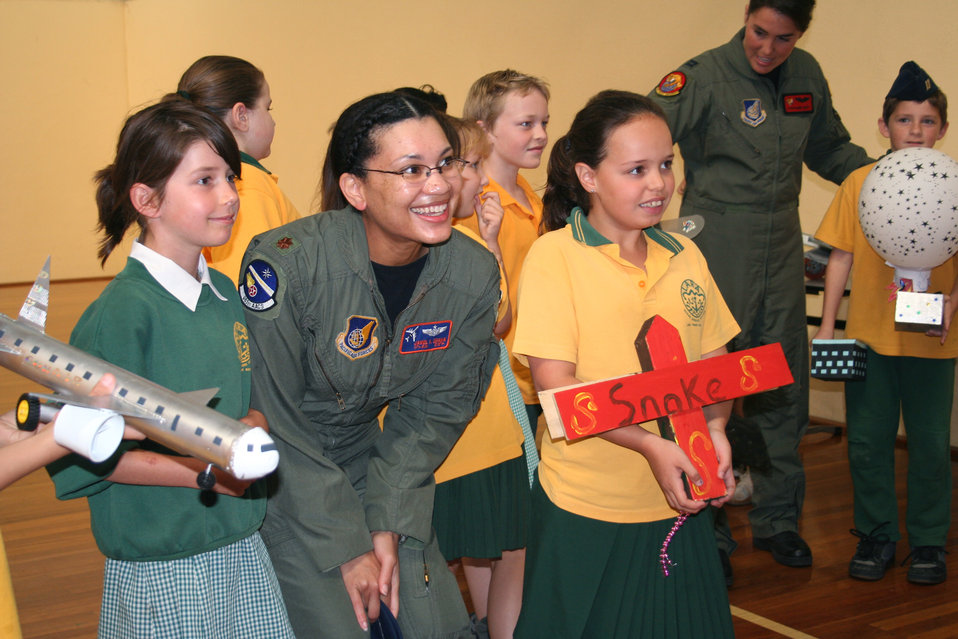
Airmen visit Australian primary school

Maj. Janel Egana, air surveillance officer with the 961st Airborne Air Control Squadron, Kadena Air Base, Japan, poses with students from the Lara Primary School, Lara, Victoria, Australia. Major Egana and other Pacific Air Forces Airmen visited the school Thursday to speak to students about being in the U.S. Air Force. The Airmen are in Australia supporting Australian International Airshow 07.